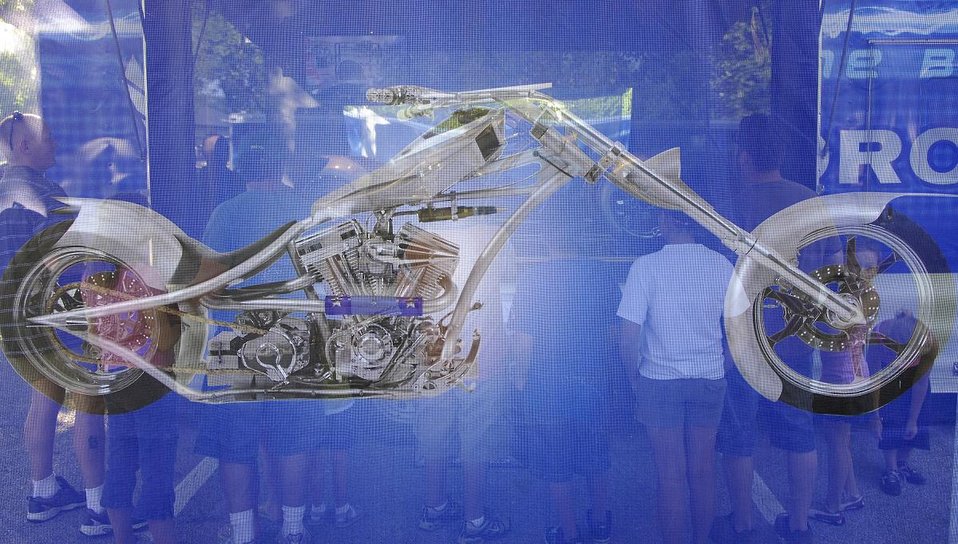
Air Force Week St. Louis

A crowd gathers around the Orange County Chopper Air Force Bike at the Jefferson Barracks Blast, July 3, 2007. St. Louis County, in partnership with the Air Force during Air Force Week, put on the blast, entertaining the more than 20,000 in attendance.